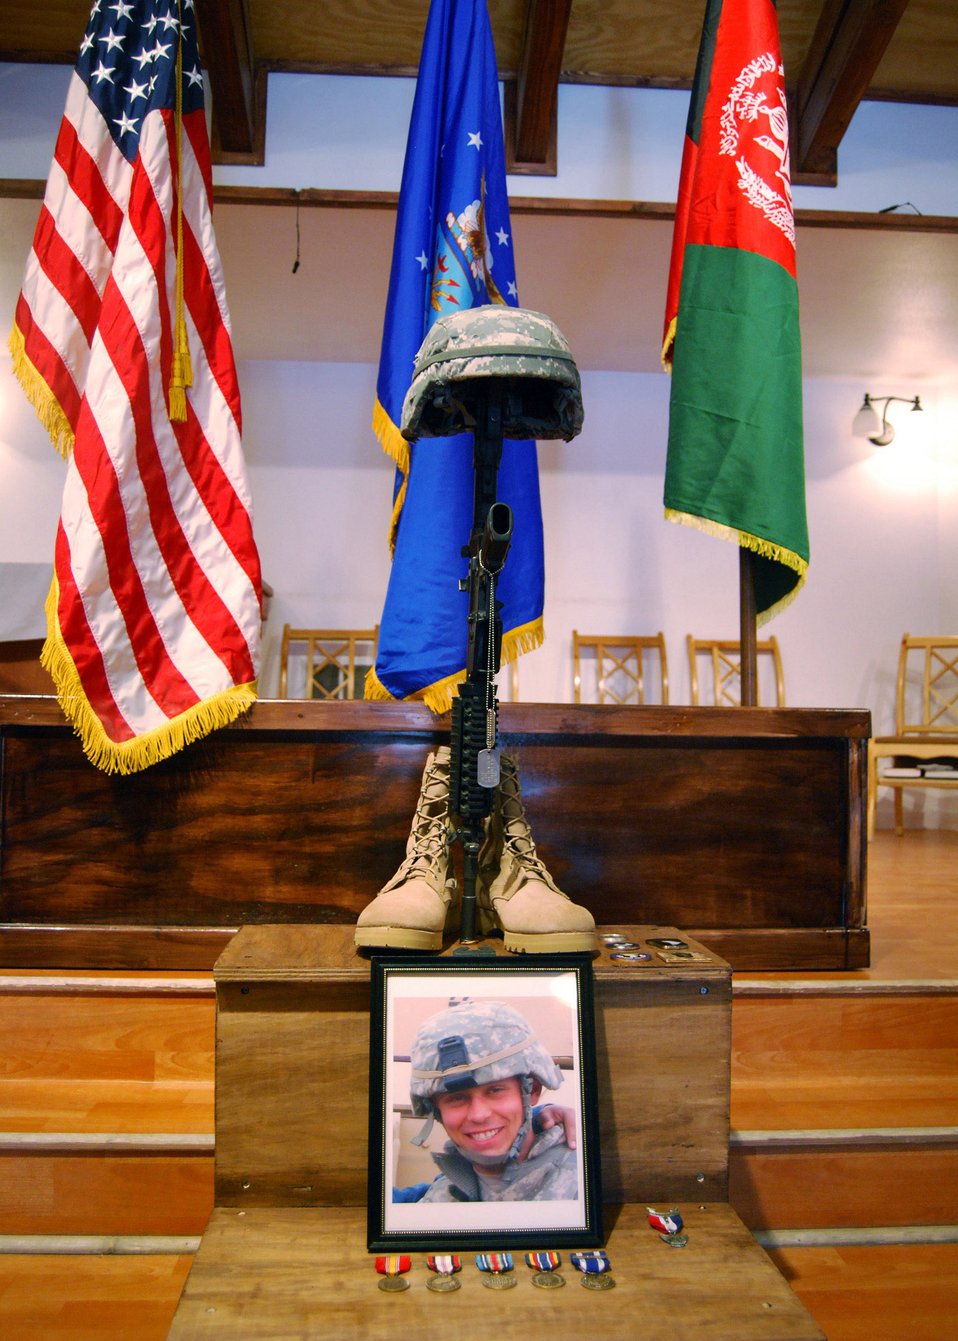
Airmen, Soldiers honor fallen comrade

A memorial is displayed in honor of Senior Airman Jonathan A.V. Yelner during a memorial ceremony May 1 at Bagram Air Base, Afghanistan. Airman Yelner died of wounds suffered when his vehicle encountered an improvised explosive device April 29 near Tag Ab, Afghanistan. Airman Yelner was assigned as a convoy driver with the Kapisa and Parwan Provincial Reconstruction Team.